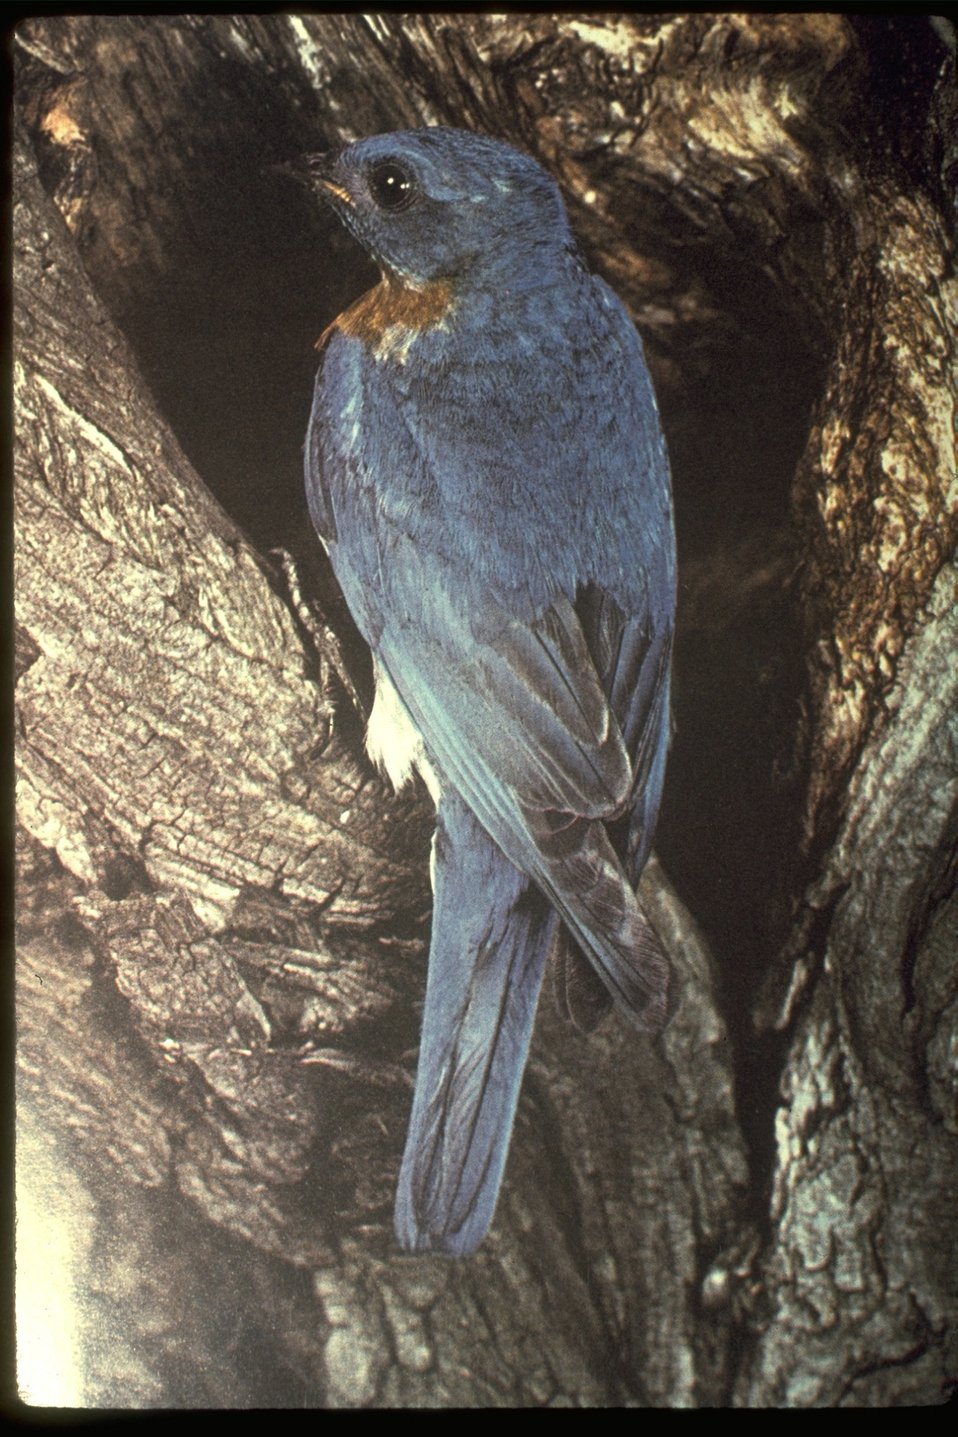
Western Blue Bird.